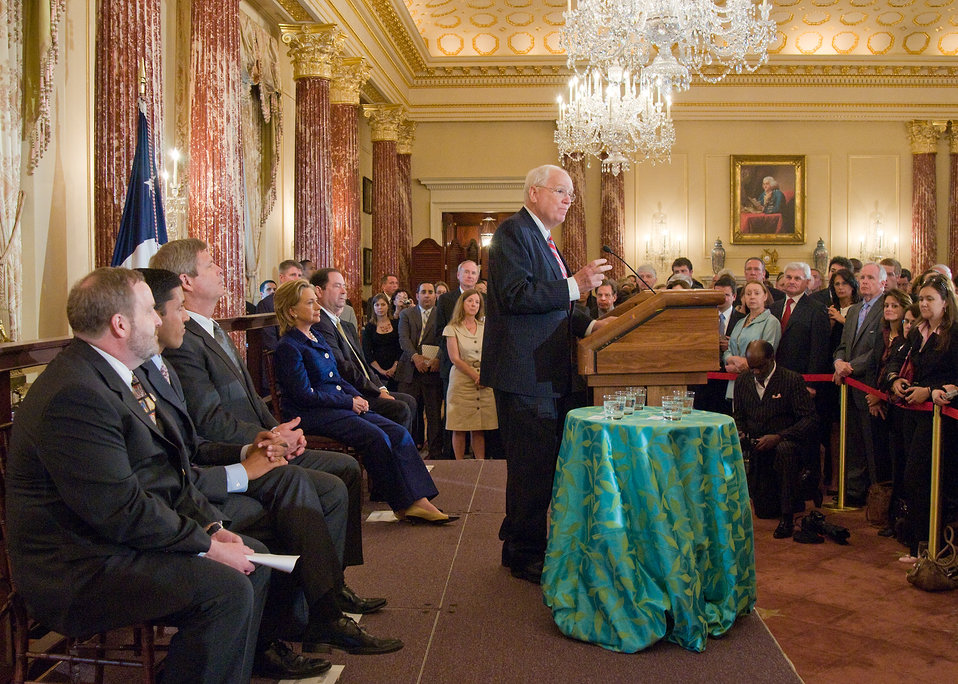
From left: Assistant Secretary, State Department William Craft, United States Agency for International Development Administrator Rajiv Shah, Agriculture Secretary Tom Vilsack, Secretary of State Hillary Clinton, World Food Prize Chairman John Ruan III, Mrs. Janis Ruan and Ambassador Kenneth Quinn, World Food Prize President (speaking) announced the 2010 World Food Prize Laureates in the Benjamin Franklin Room at the U.S. State Department in Washington, DC, on Wednesday, June 16, 2010. This years co-winners are Reverend David Beckmann, President of Bread for the World and Jo Luck, Heifer International. Ambassador Quinn also, invited the audience to attend the 2010 Borlaug Dialog a summit on world hunger in Des Moines, Iowa in October of this year. USDA Photo 10di1403-006.